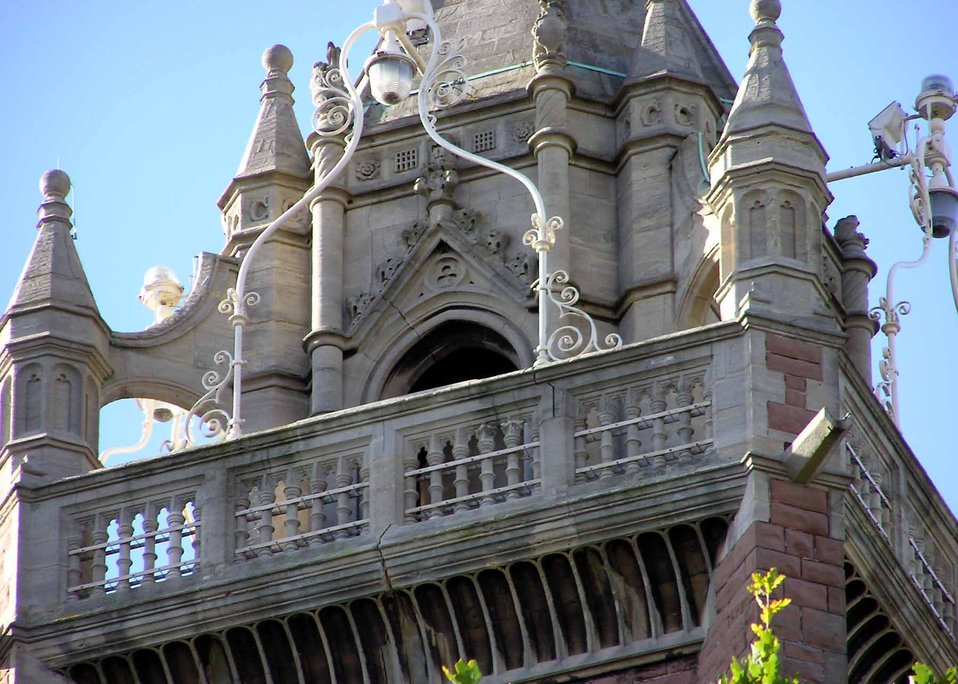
The Cabot Tower, Bristol, England.
The 105 foot high (32 metre) Cabot Tower on Brandon Hill is in the city centre of Bristol, England. The tower was opened in 1898 to commemorate the 400th anniversary of explorer John Cabot’s voyage to America in 1497. The tower was built from red sandstone and cream Bath stone. The roman numerals CCCC(400) are engraved on the four sides. The winged figure on top represents Commerce. The tower is free admission. The view includes the leisure and housing complex being built at Canons Marsh (where At-Bristol is situated), the SS Great Britain ship, the Council House and Cathedral, the impressive University Tower and just a glimpse of the Clifton Suspension Bridge.